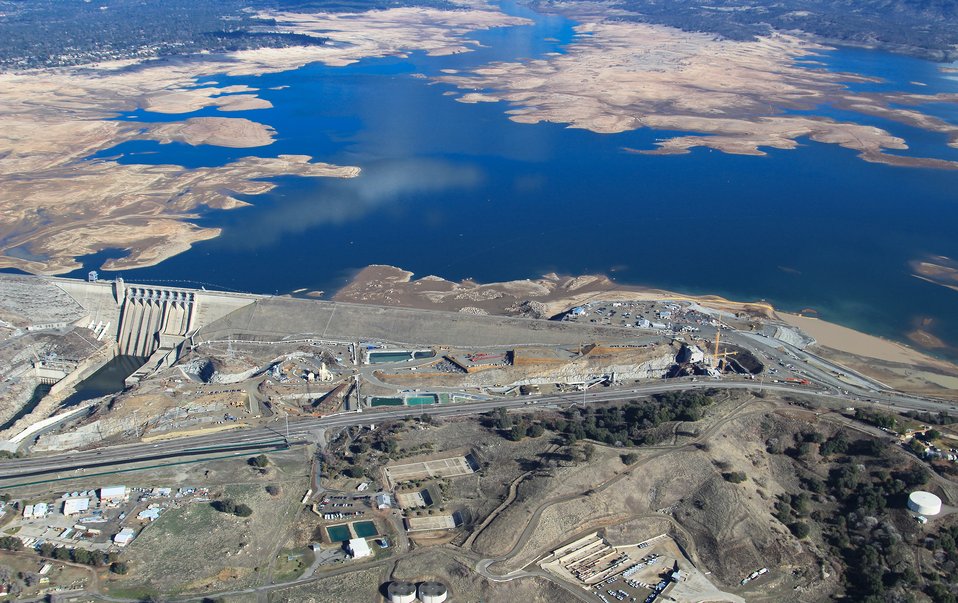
Auxiliary Spillway progress surges forward

Severe drought conditions continue to impact water levels at Folsom Lake, as seen here Feb. 1, 2014. Meanwhile, construction continues along the full length of a new auxiliary spillway at Folsom Dam, including the approach channel, control structure, and chute. The control structure will operate in conjunction with existing spillway gates on Folsom’s Main Dam to manage flood flows from Folsom Reservoir and provide the Greater Sacramento Metropolitan area with up to a 1 in 200 year level of protection. (Photo from Kiewit Infrastructure West Co./Released)